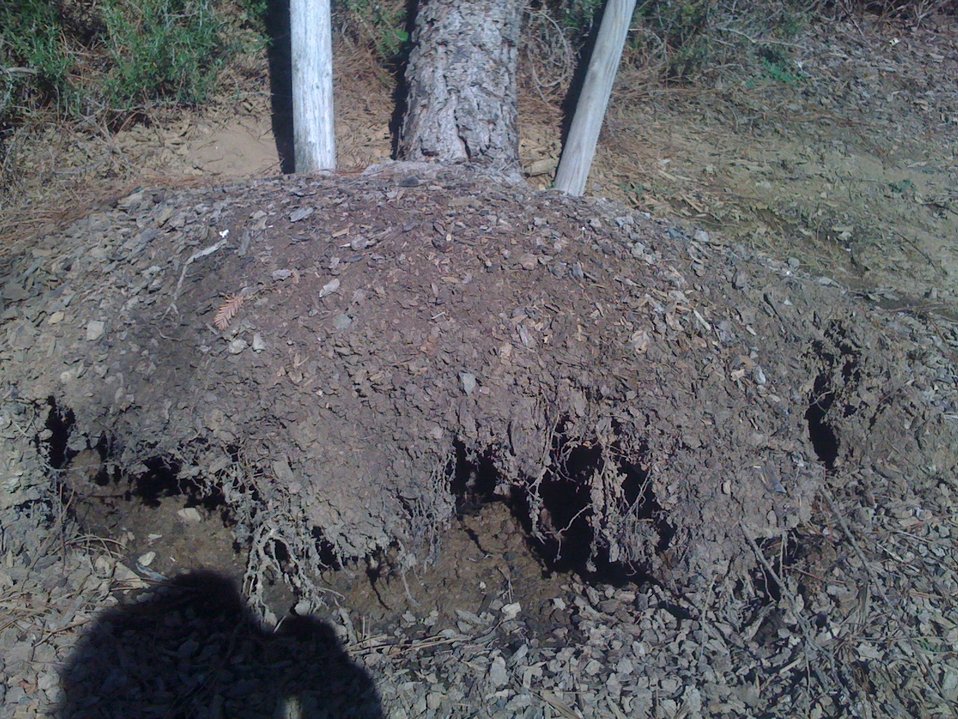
Root ball creates hole in Elk Grove levee

The root ball of a toppled tree creates a hole in the Laguna West levee in Elk Grove, Calif., identified during a U.S. Army Corps of Engineers levee inspection July 29, 2009. The U.S. Army Corps of Engineers inspects levees in its Rehabilitation and Inspection Program to ensure levees don’t pose an unacceptable risk to lives, and to provide levee managers and residents with detailed information on the condition of levees to help them make informed decisions about safety.